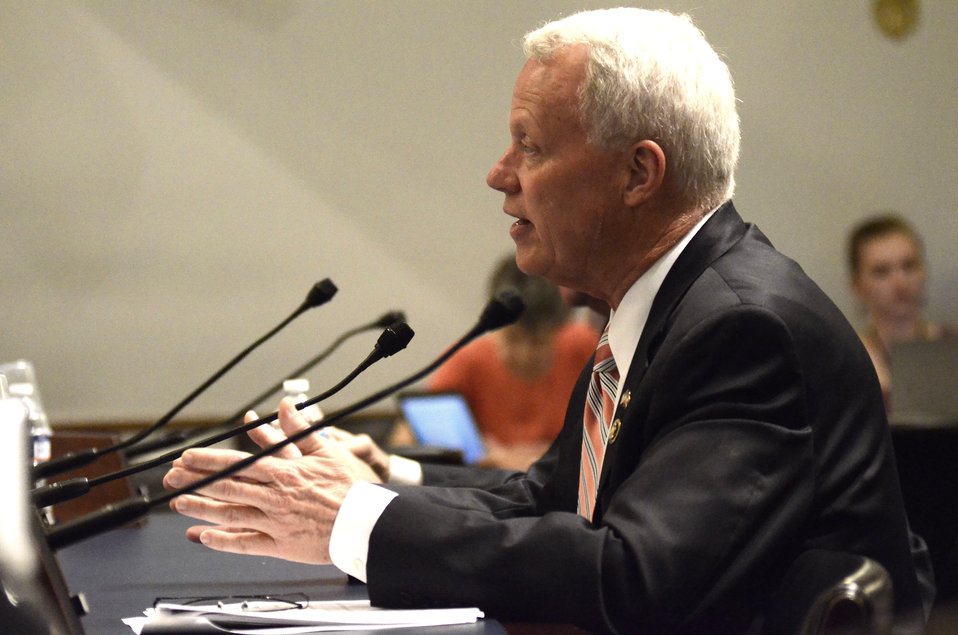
Congressman Paul C. Broun (GA) testifies on Retailers & Entertainers Lacey Implementation & Enforcement Fairness Act & Freedom from Over-Criminalization & Unjust Seizures Act at the Longworth House Office Building in Washington, D.C. on Tuesday, May 8, 2012.